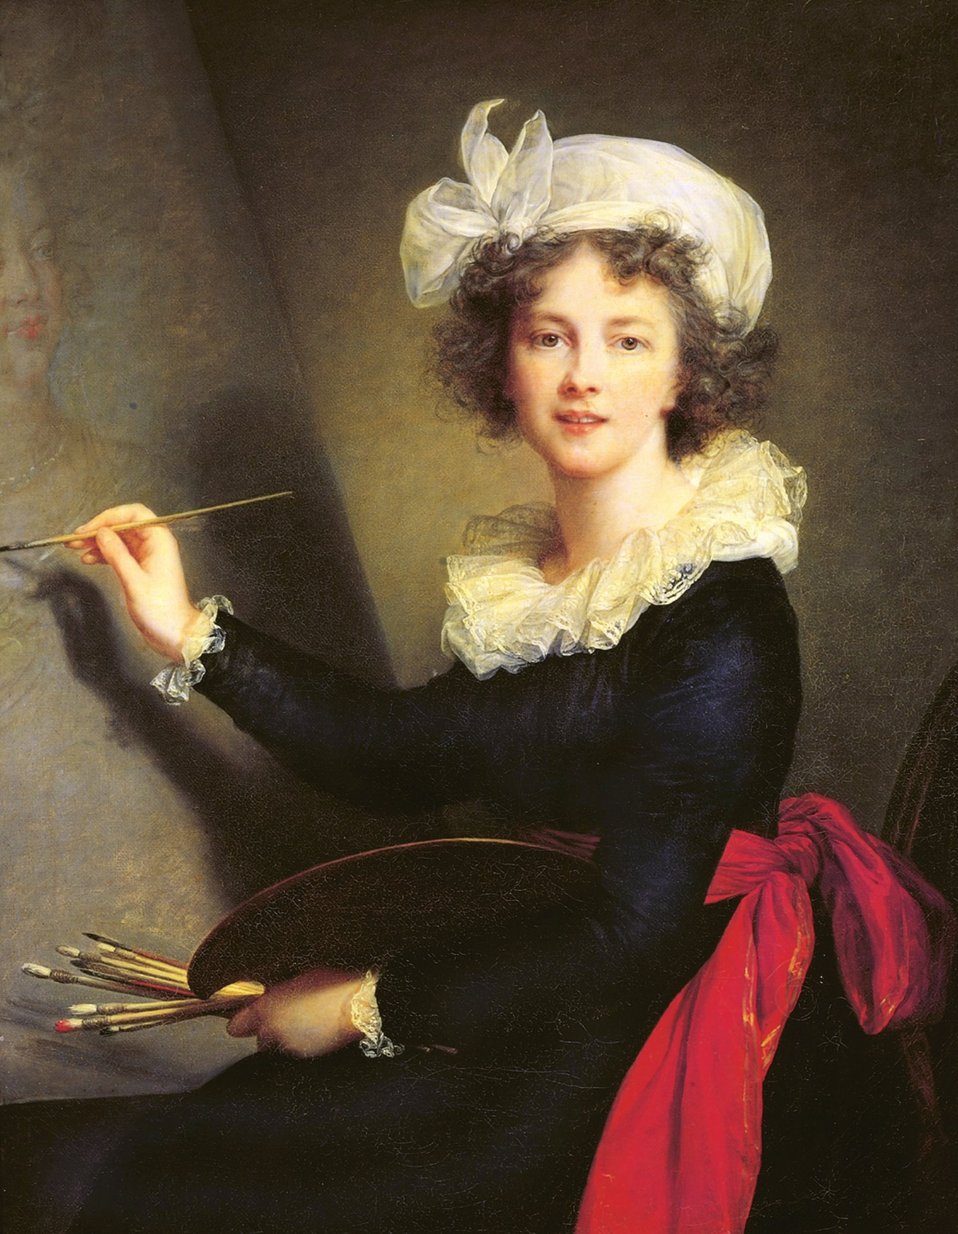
Lebrun, Self-portrait